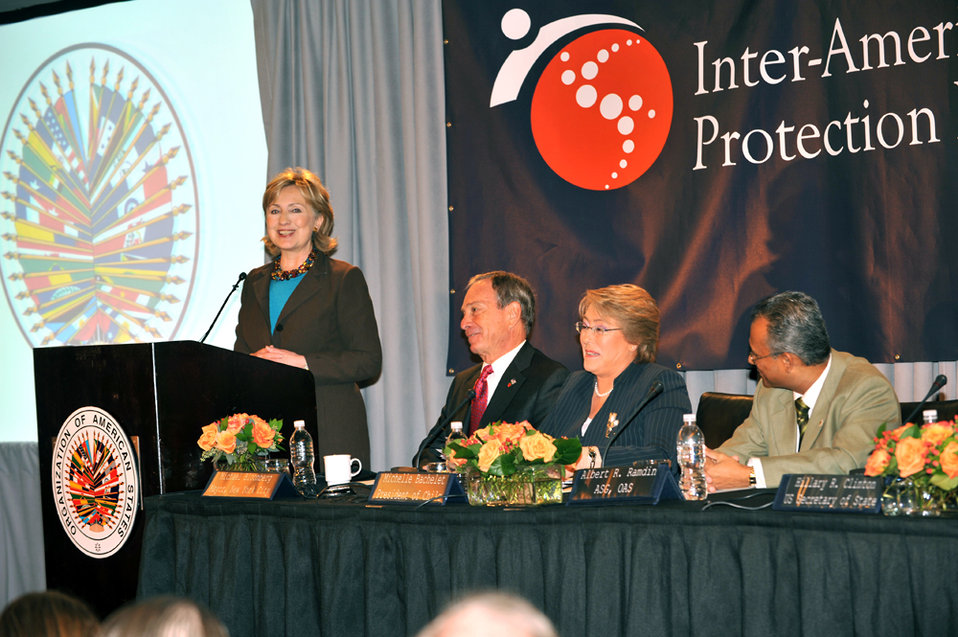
UNGA 2009: Secretary Clinton Speaks at Inter-American Social Protection Network

U.S. Secretary of State Hillary Rodham Clinton delivers remarks at the Launch of the Inter-American Social Protection Network at the Westin hotel during the 64th Session of the UN General Assembly in New York City, New York September 22, 2009.